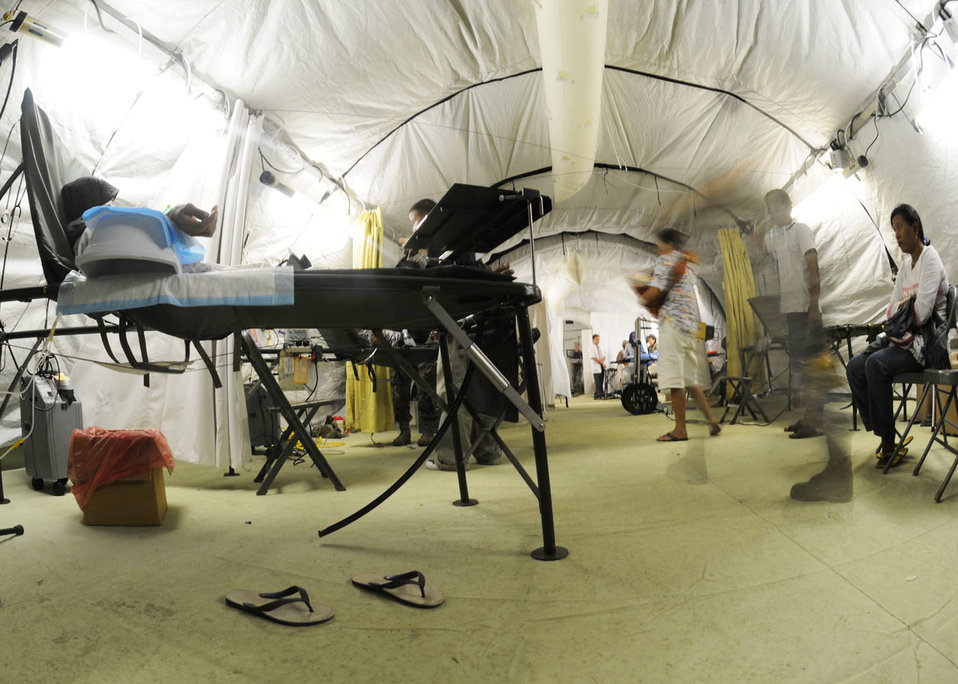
Interpreters key to Air Force efforts in Indonesia

Inside a mobile field hospital, an Air Force humanitarian assistance rapid response team provides medical assistance to those affected by the recent earthquakes Oct. 10, 2009, in Padang, Indonesia. HARRT Airmen are deployed from Andersen Air Force Base, Guam; Elmendorf AFB, Alaska; Hickam AFB, Hawaii; and Yokota Air Base, Japan.